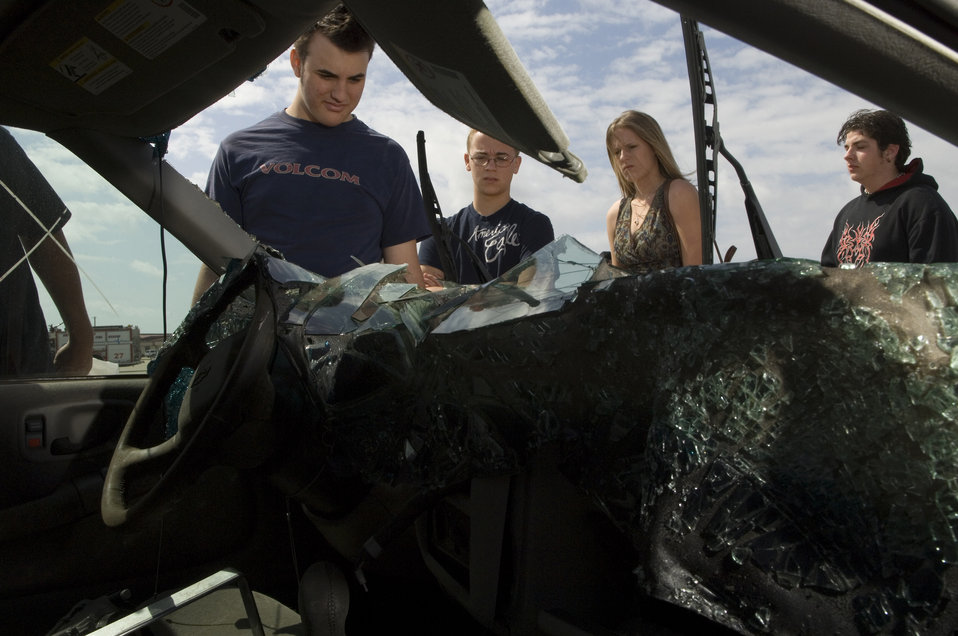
'Not on Our Watch'

Students from Eau Gallie High School in Melbourne, Fla., look over a wrecked car Tuesday, April 11, 2006, during Operation NOW events at Patrick Air Force Base, Fla. NOW -- which stands for Not on Our Watch -- is designed to scare teens into safer driving habits. Approximately 800 high school seniors attended the first day of the three-day event.